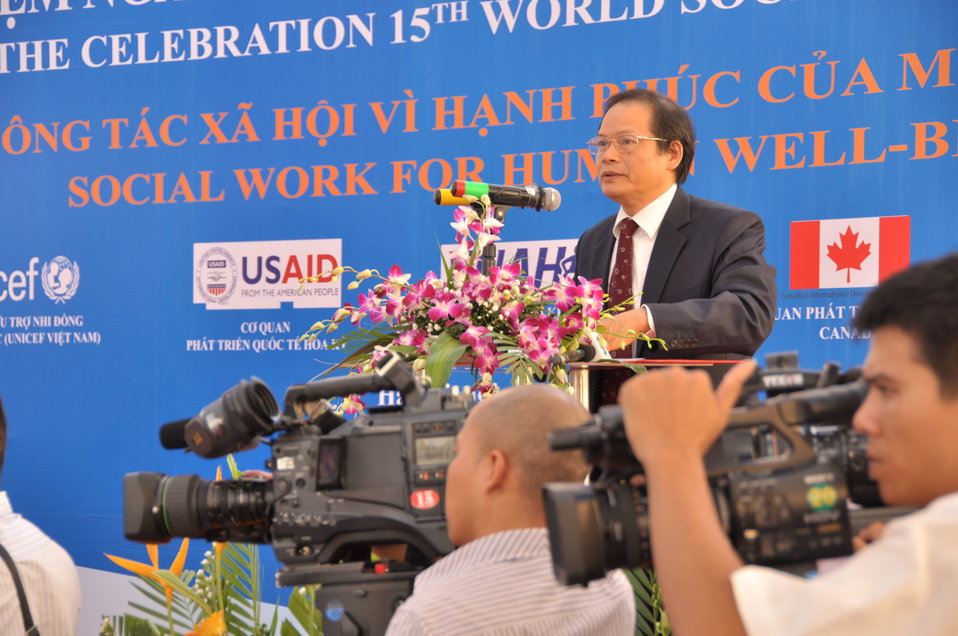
Prof., Dr. Nguyễn Văn Khánh, Rector of University of Social Sciences and Humanities, speaks at the Social Work Day event in Hanoi

Photo: @USAIDVietnam, November 9, 2012